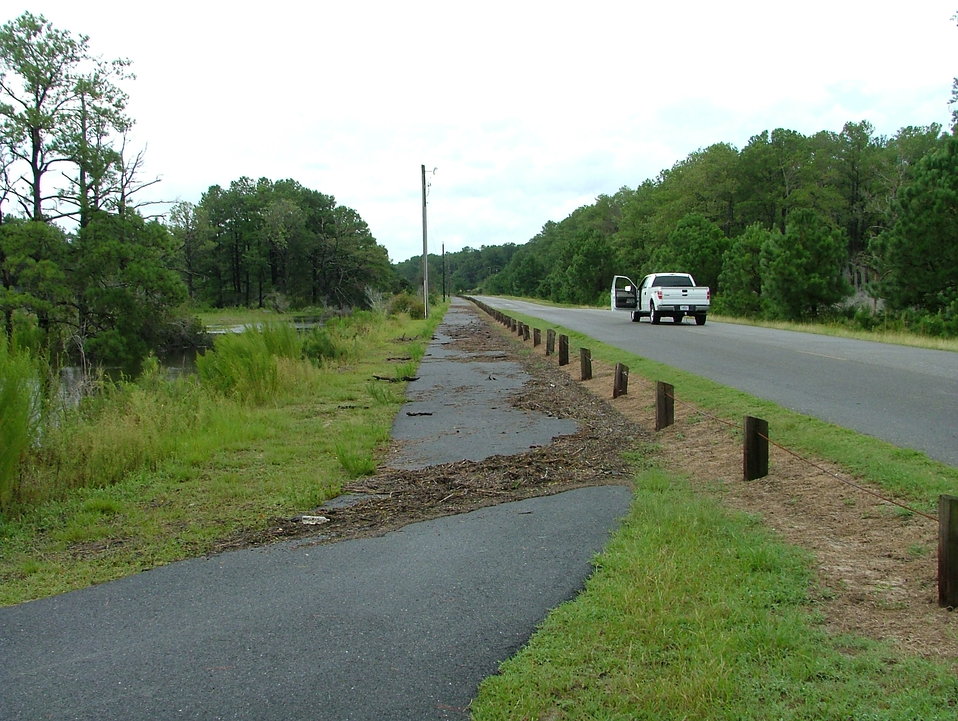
High water mark

Debris on the bike trail shows the high water mark along Beach Road. Damage caused by Hurricane Irene at Chincoteague National Wildlife Refuge in Virginia.